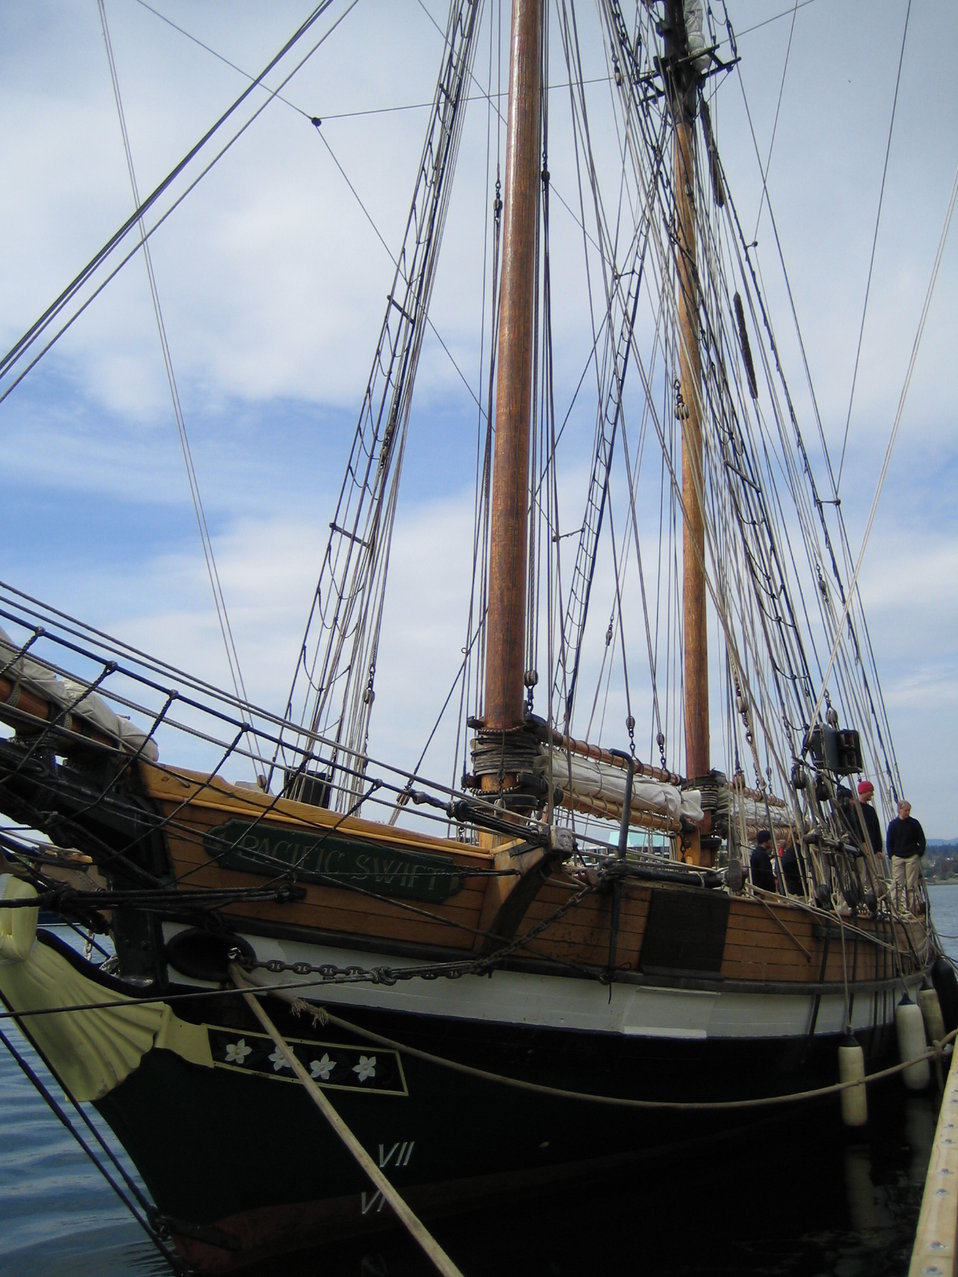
Photo taken by Graham Kinglsey